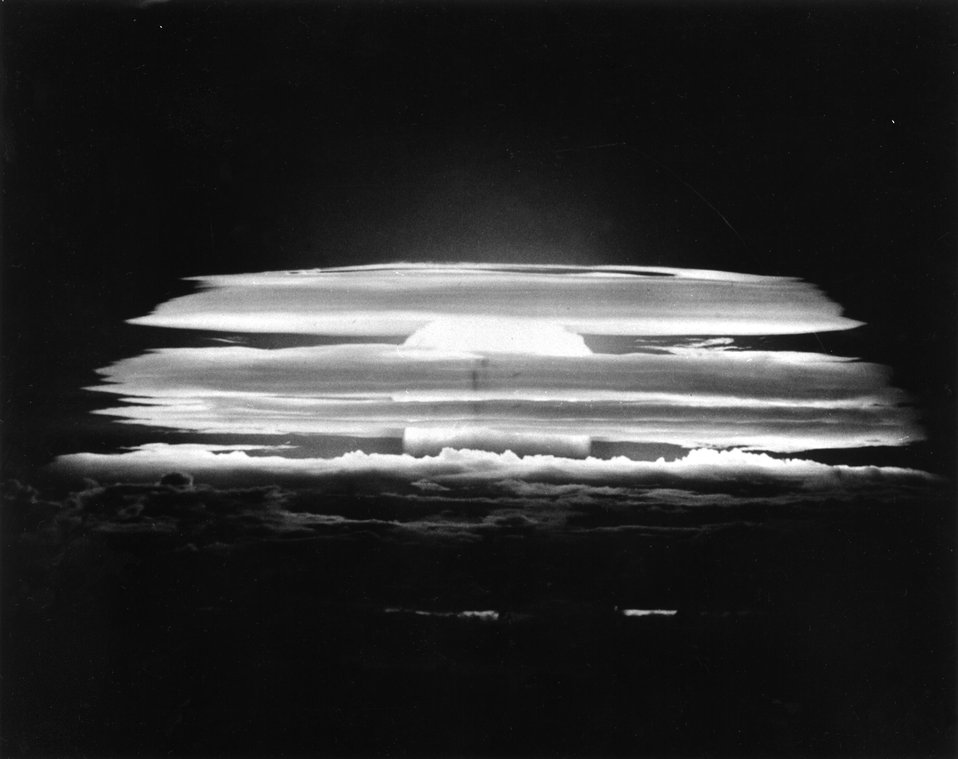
Fireball of May 21, 1956 test detonation over Bikini Atoll.